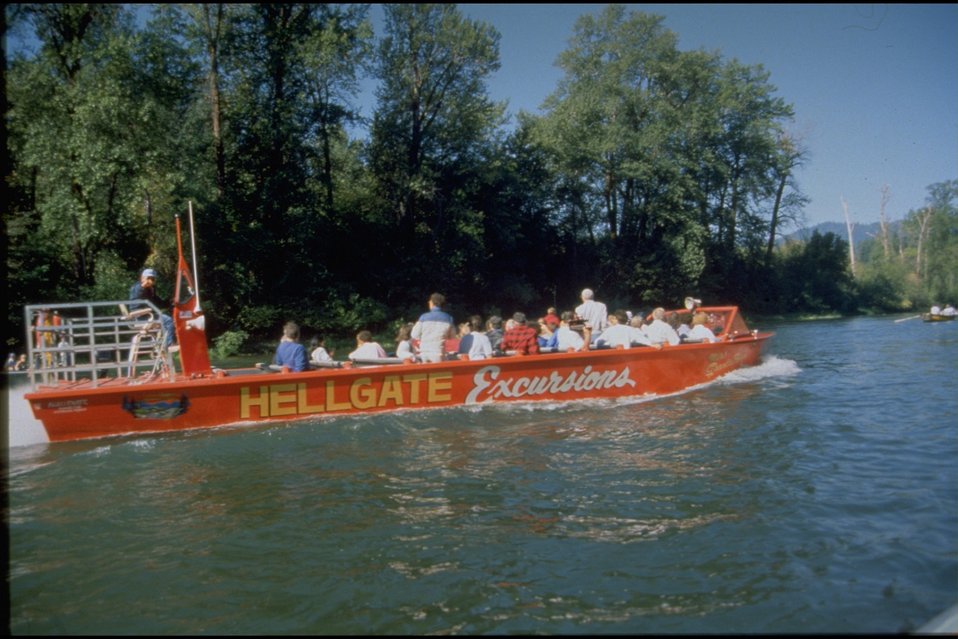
Rogue River - Near Whitehorse Park. Commercial Jetboat from Grants Pass Hellgate Recreation Area.